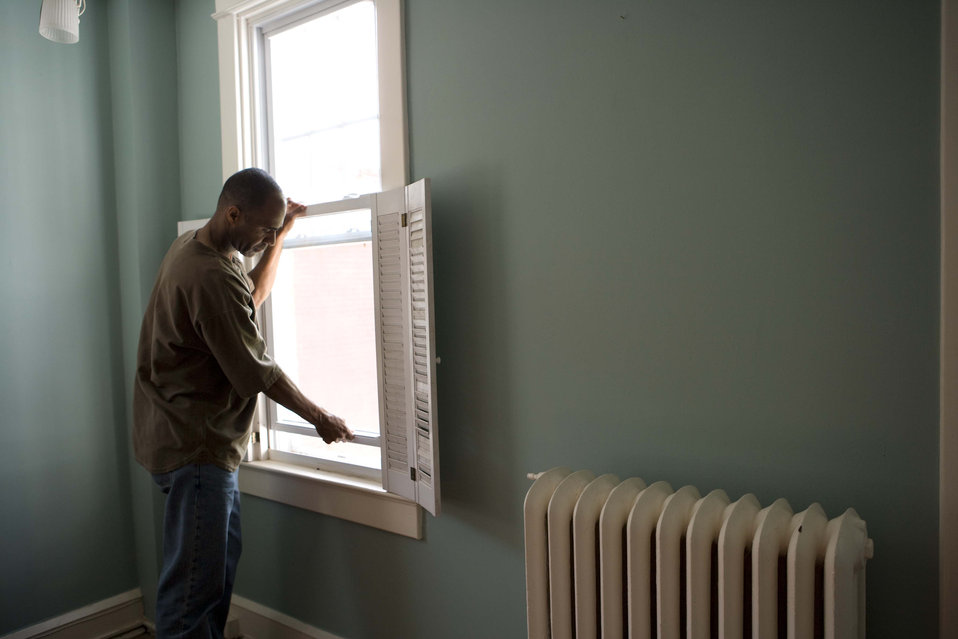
When renovating a home, you should use a damp sponge or cloth to clean dust collected on a window sill, as the dust may contain asbestos or lead-based paint. Home maintenance is an ongoing process for any homeowner, and here we see an African-American man as he was preparing a window in his home for a general cleaning.